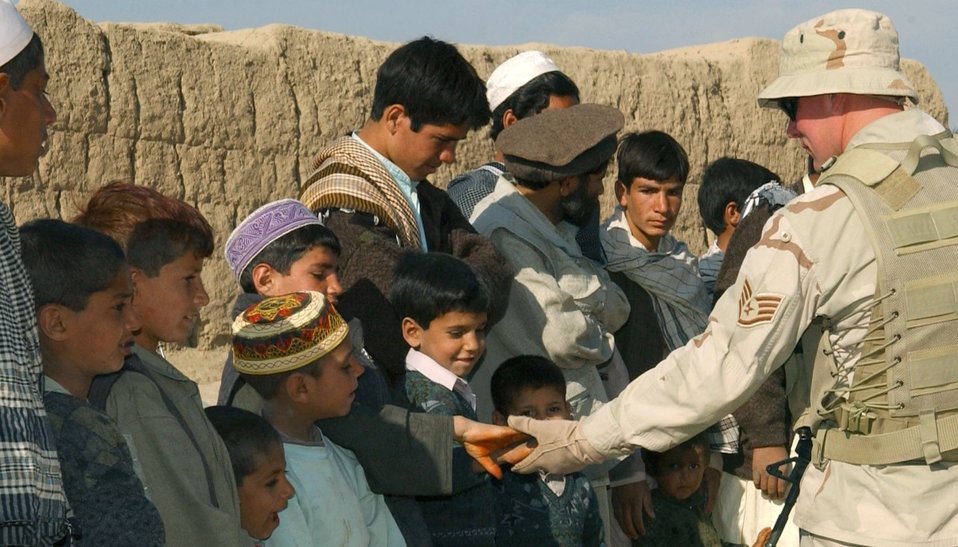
Airmen revive adopt-a-village program

KHAROTI, Afghanistan -- Staff Sgt. James Kamrad shakes hands with young villagers waiting for school supplies to be distributed during a recent adopt-a-village visit. The 455th Expeditionary Security Forces Squadron force protection intelligence Airman visits local villages often, which he said he enjoys because he gets to learn about local Afghan culture. Sergeant Kamrad is deployed to nearby Bagram Air Base from Pope Air Force Base, N.C., supporting Operation Enduring Freedom